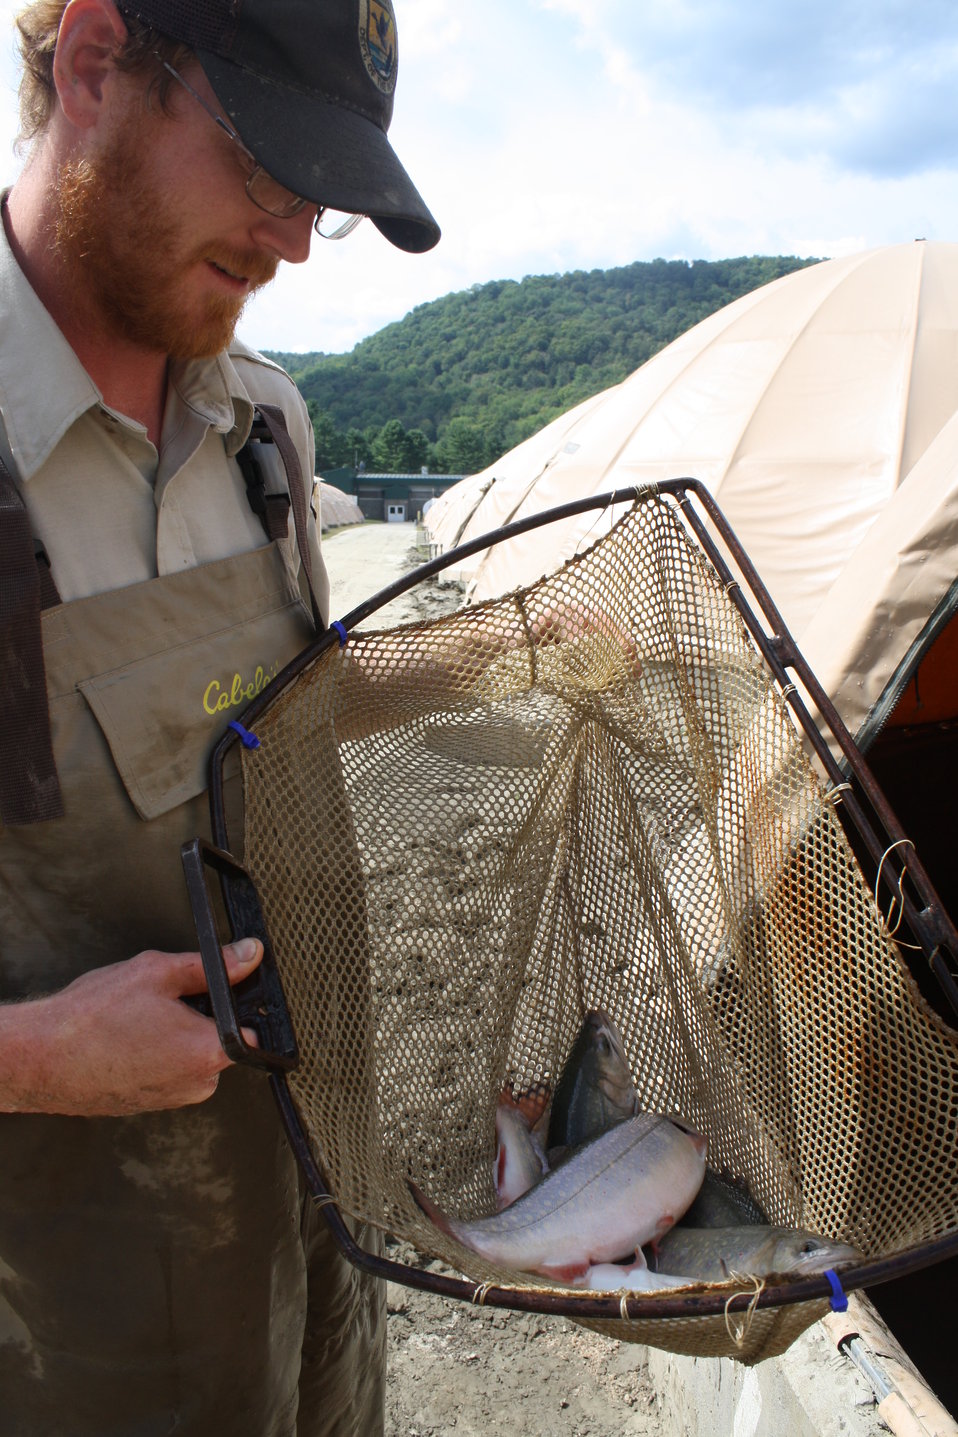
USFWS technician sorting fish (Brook trout) that escaped and were recaptured after flood waters from Hurricane Irene receded.